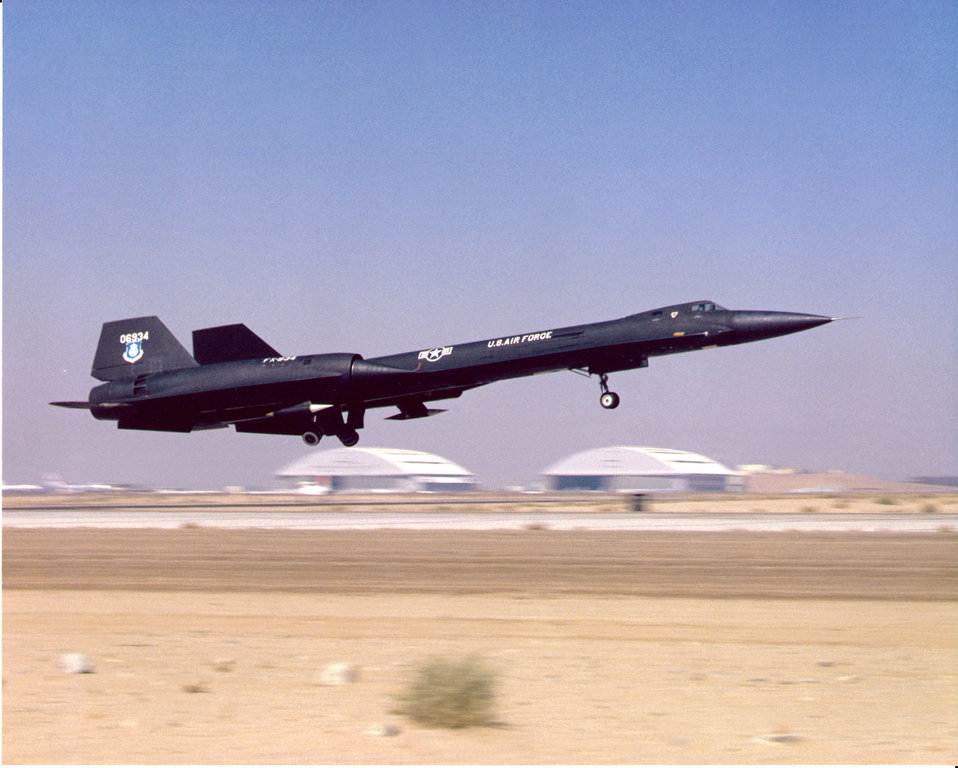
Lockheed YF-12

The Lockheed YF-12 takes off from Edwards Air Force Base, Calif. The aircraft established seven world speed and altitude records, including an absolute top speed of 2,070 mph and a sustained altitude of 80,257 feet, on May 1, 1965.